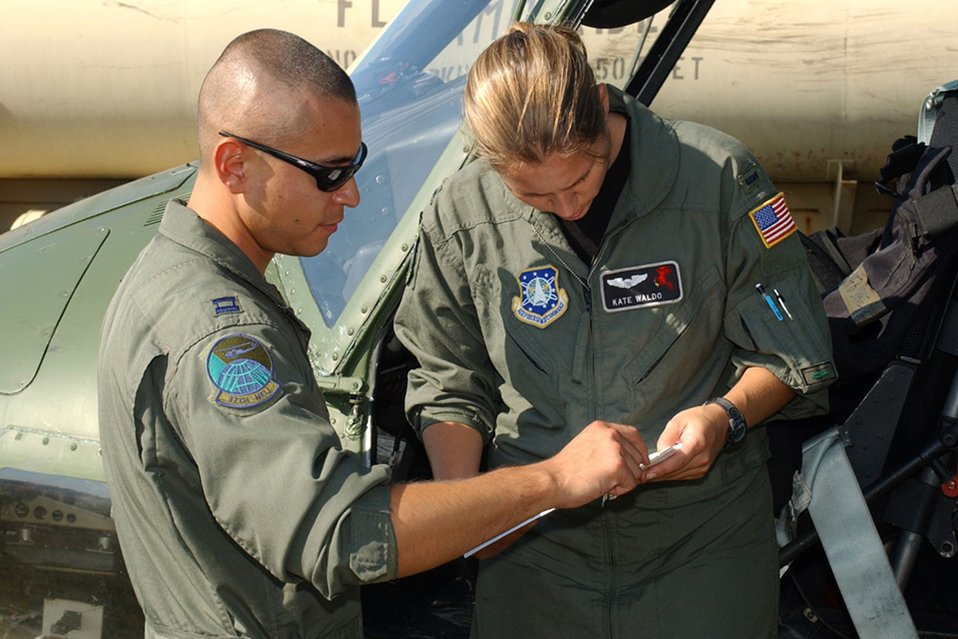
Delivering hope

COLUMBUS AIR FORCE BASE, Miss. -- Capt. Jake Brittingham (left) and 1st Lt. Kate Waldo prepare for take off to deliver supplies in the Gulf Coast area of Mississippi to those who have been affected by Hurricane Katrina. Both are pilots with the 620th Air Expeditionary Squadron here. Captain Brittingham is deployed from F.E. Warren Air Force Base, Wyo., and Lieutenant Waldo is deployed from Vandenberg AFB, Calif.